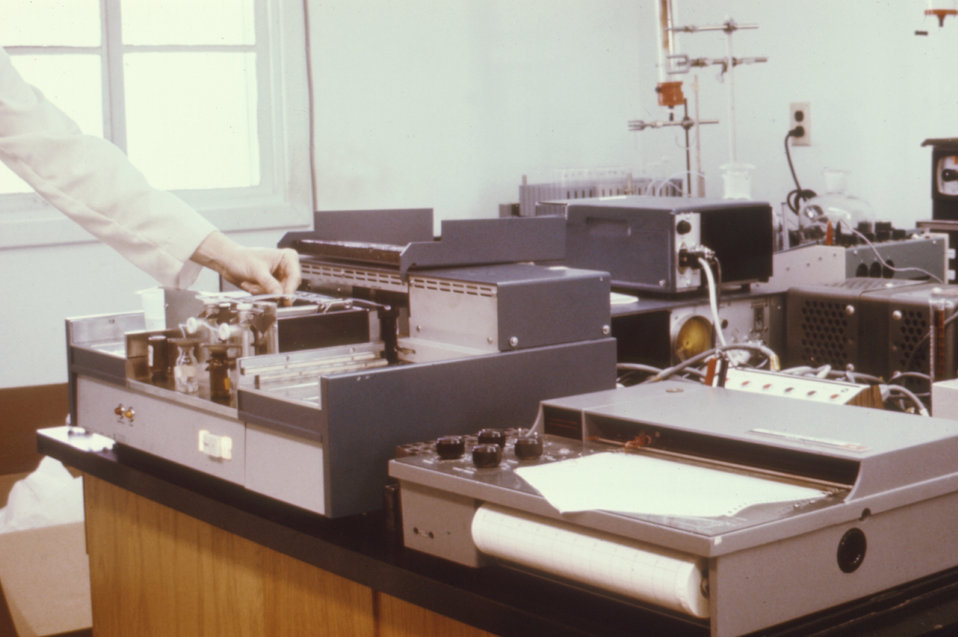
This 1974 photograph shows laboratorian working with an LKB automatic enzyme processor.